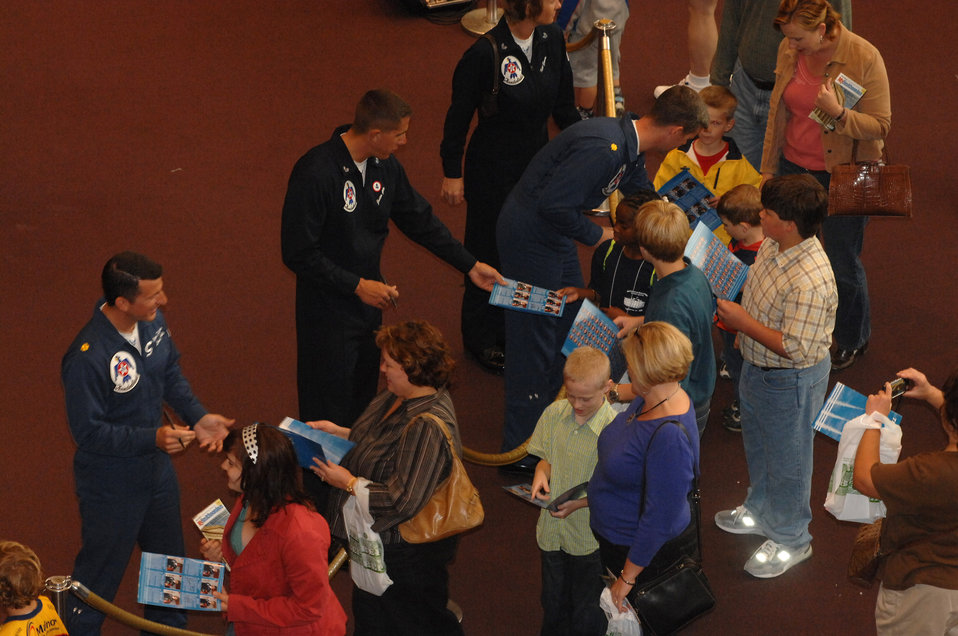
Thunderbirds visit Smithsonian Air and Space Museum

The Air Force Thunderbirds demonstration team was at the Smithsonian Air and Space Museum Oct. 11 in Washington, D.C. Team members signed autugraphs and were at the Smithsonian as part of a week-long series of events that will culminate with the opening of the Air Force Memorial Oct. 14.